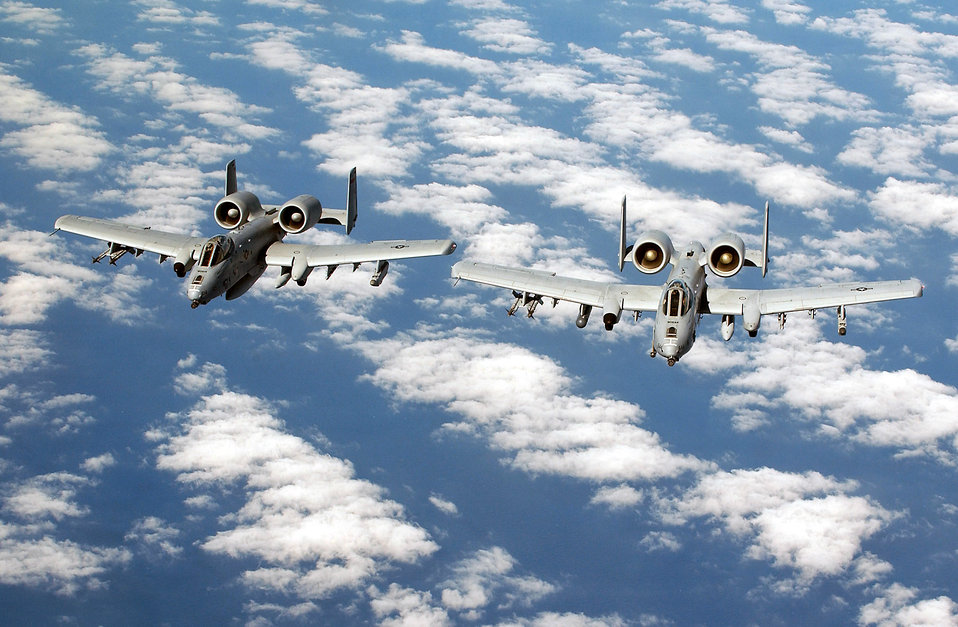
Pair of

OVER THE MEDITERRANEAN SEA -- A pair of A-10 Thunderbolt IIs from the 104th Fighter Wing, Barnes Municipal Airport, Westfield Mass., Massachusetts Air National Guard, fly over the Mediterranean Sea enroute to a forward operating base.